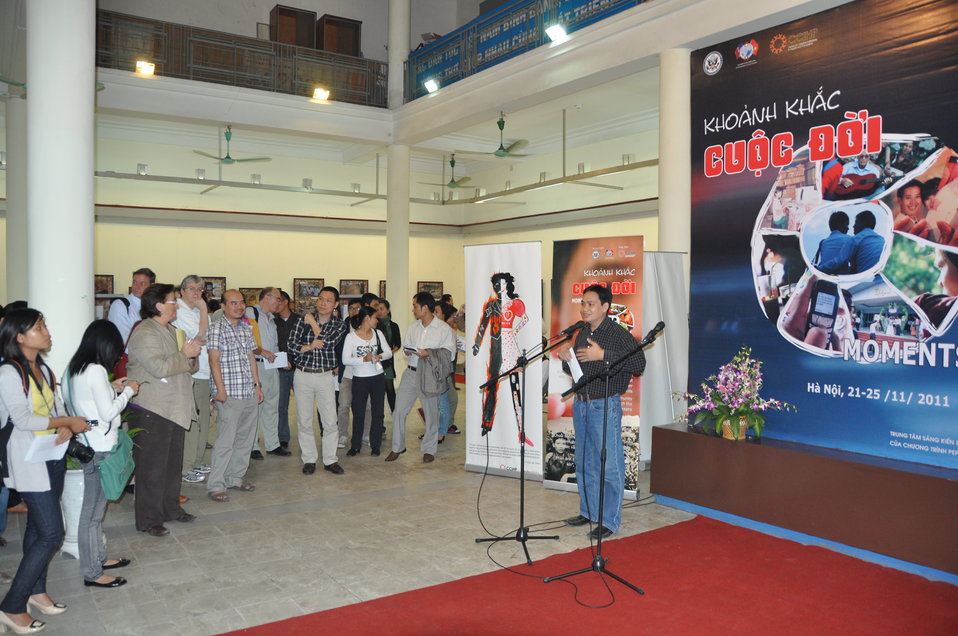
Moments in Life Exhibit: PEPFAR